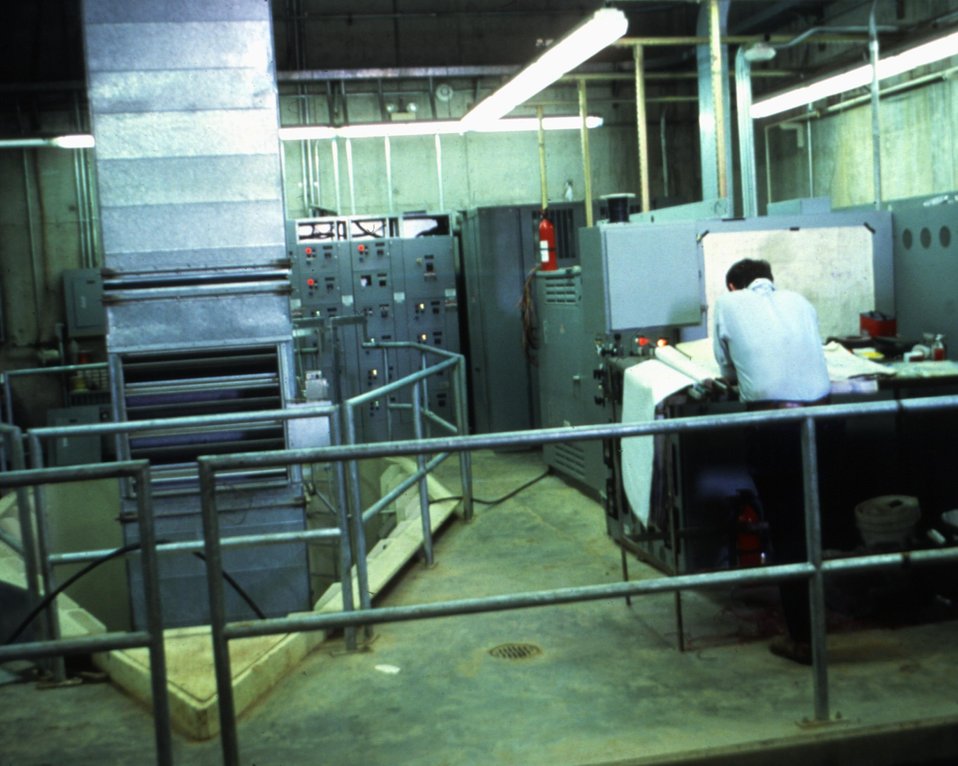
GENERAL VIEW OF OPEN PIT.

THE DOE SMALL-SCALE HYDROPOWER PROGRAM CONSISTS OF 19 PROJECTS AND DEMONSTRATES THE VIABILITY OF SMALL-SCALE HYDRO-POWER WITH AVAILABLE TECHNOLOGY. THE BROAD RIVER PROJECT, BEGUN IN JANUARY, 1983, WENT ON LINE DECEMBER 27, 1987. UTILIZING ONE OPEN-PIT TUBULAR TURBINE THAT PRODUCES A MAXIMUM OF 4,140 KILOWATTS, THE DAM PROVIDES A GROSS HEAD OF 20.2 FEET WITH AN ANNUAL STREAM FLOW OF 2,472 CFS.